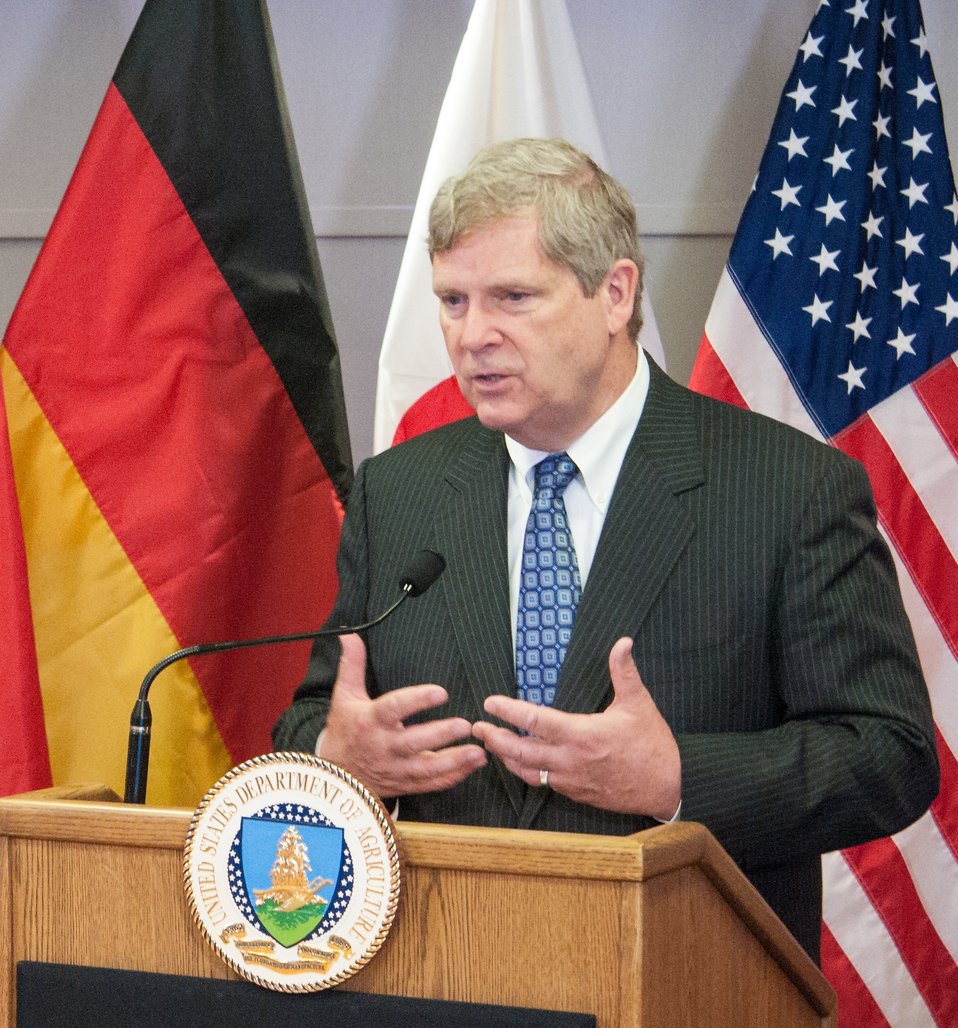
Agriculture Secretary Tom Vilsack and Agriculture Under Secretary for Research, Education, and Economics (REE) Dr. Catherine Woteki held a press conference after giving remarks at the G-8 International Conference on Open Data for Agriculture in Washington, D.C. on Monday, Apr. 29, 2013. The conference launched a new 'virtual community'of Food, Agriculture, and Rural data on Data.gov-the U.S. Government's data sharing website-to catalogue America's publicly available agricultural data and increase the ability of the public to find, download, and use datasets that are generated and held by the Federal Government. The data community features a collection of more than 300 newly cataloged datasets, databases, and raw data sources related to food, agriculture, and rural issues from agencies across the U.S. Government. In addition to the data catalog, the virtual community shares a number of applications, maps and tools designed to help farmers, scientists and policymakers improve global food security and nutrition.